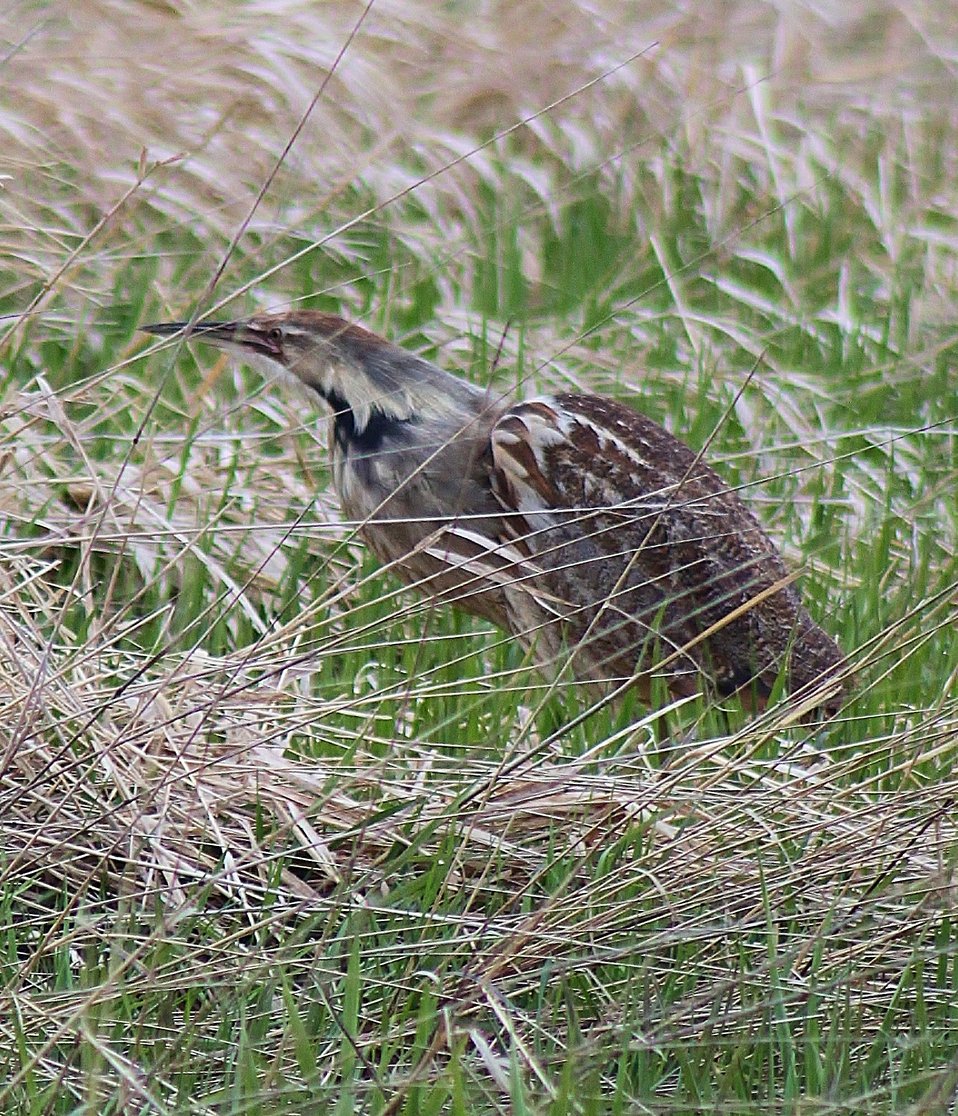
Photo of the Week - American Bittern (VT)

American bittern photographed at Missisquoi National Wildlife Refuge.